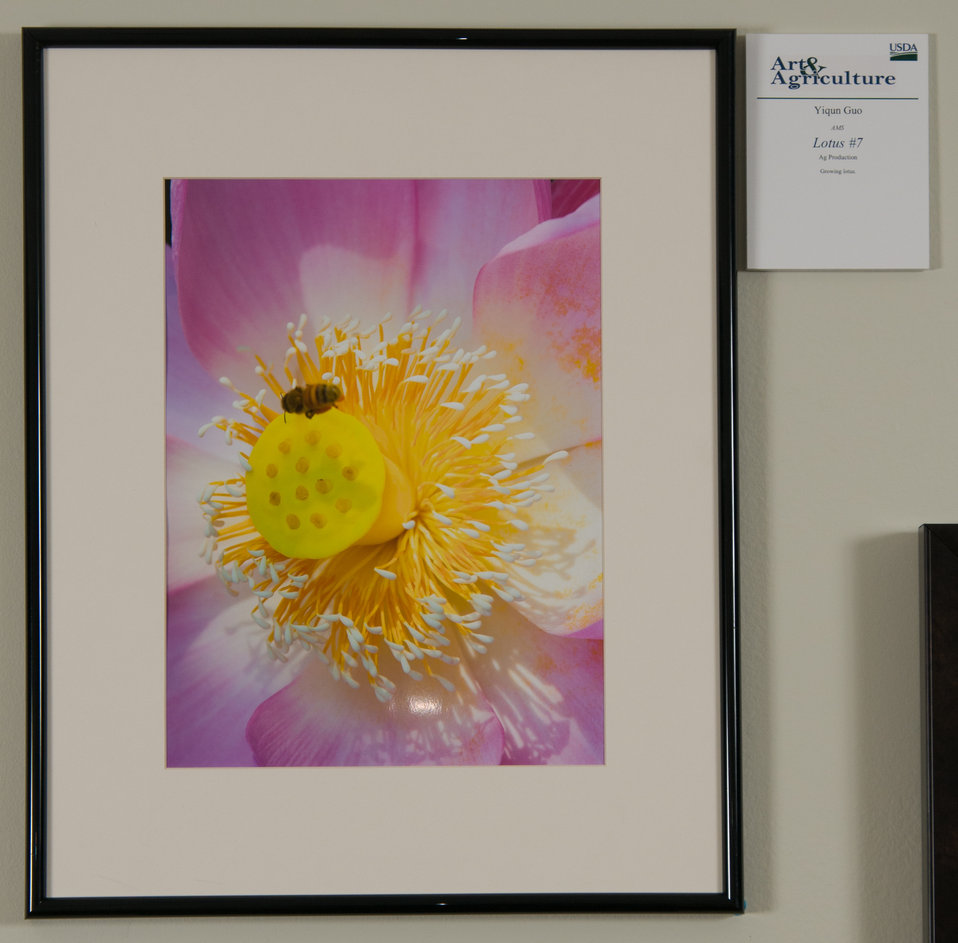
Online Viewer's Choice entries of the 2013 Art & Agriculture, Tuesday, July 9, 2013, in the South Building, Washington, D.C. Themes were expressed by employees from across the department and the contest was open to full-time and part-time USDA employees. Winning artwork will be displayed till the end of the year. U.S. Artistic expression is a creative outlet that is vital for an individual to grow and develop.